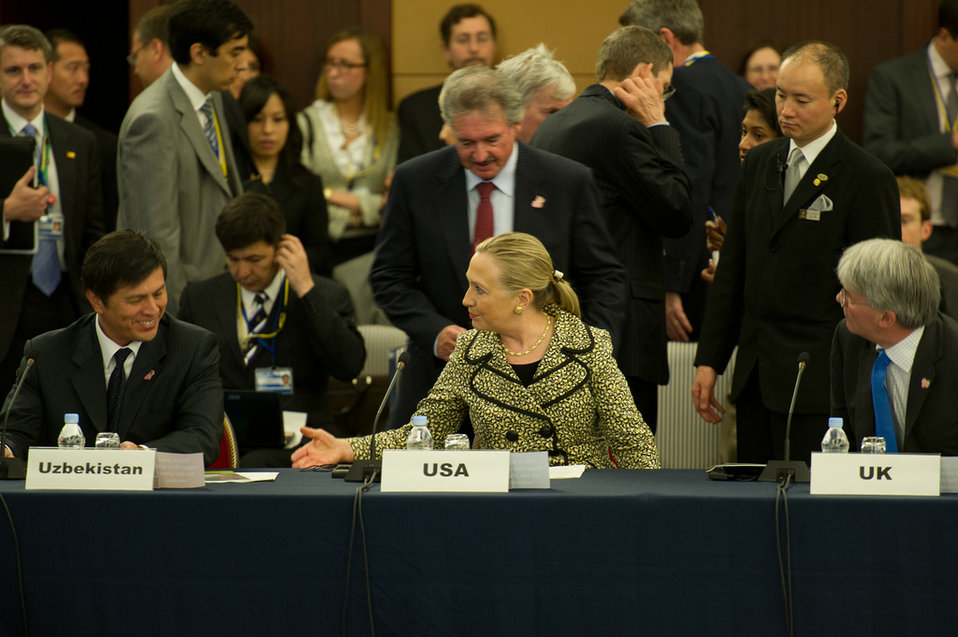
Secretary Clinton Participates in the Tokyo Conference on Japan

U.S. Secretary of State Hillary Rodham Clinton participates in the Tokyo Conference on Afghanistan in Tokyo, Japan, on July 8, 2012.